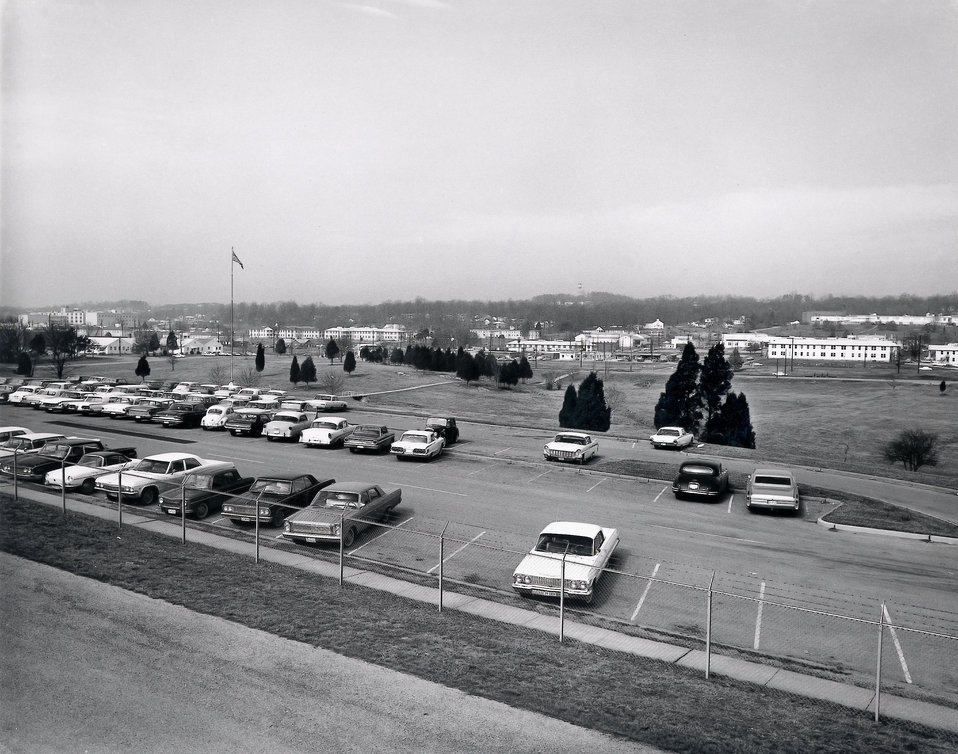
Proposed New Bldg. Site for DOE Federal Bldg. Oak Ridge

65-60 DOE photo by Ed Westcott 2-16-1965 Oak Ridge Tennessee